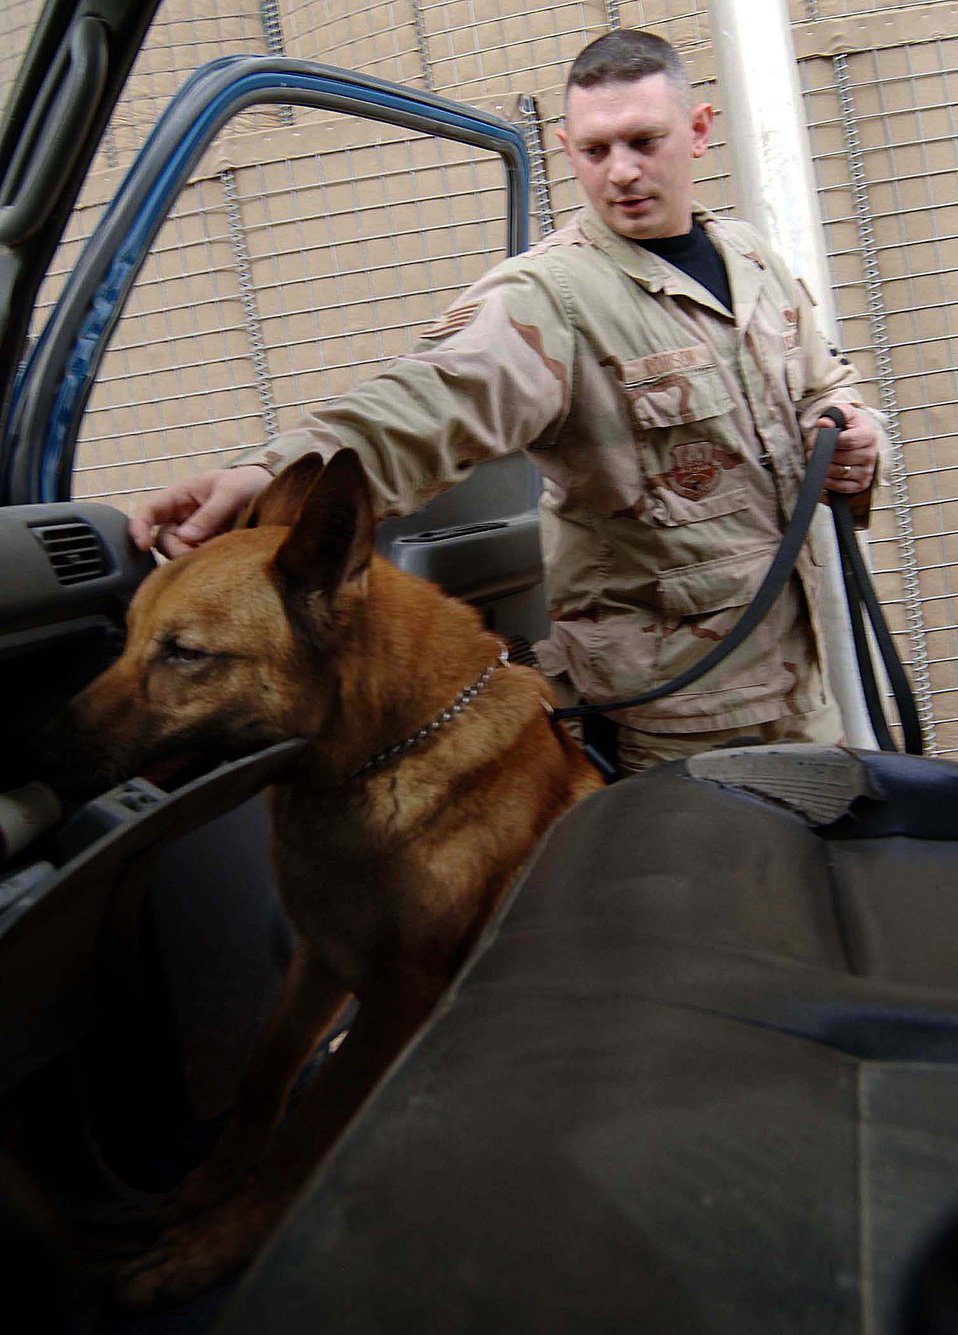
Security forces Airmen protect Sather Air Base

Staff Sgt. Jeremy Robison and his military working dog, Zorro, inspect a vehicle for explosives and contraband at the search pit at Sather Air Base, Iraq. The pit processes more than 600 vehicles and 2,000 people a week. Sergeant Robison and Zorro are with the 447th Expeditionary Security Forces Squadron.